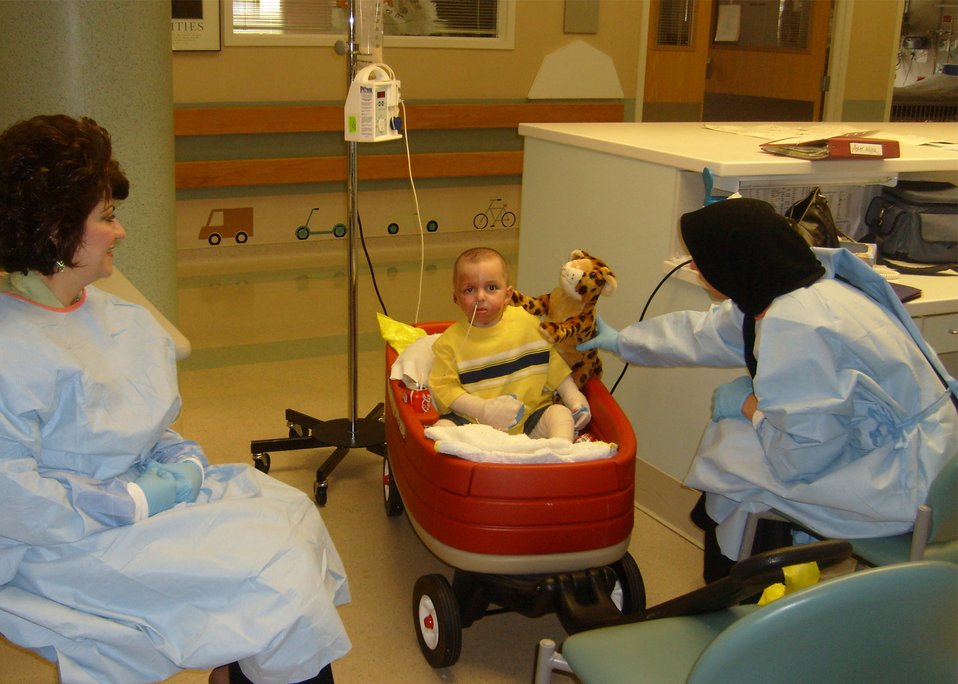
Young Iraqi burn victim progressing well

Al Amreeki receives a stuffed toy from his mother, Amil, April 10 at Shriners Hospital in Cincinnati. The 3-year-old left Balad Air Base, Iraq, with more than 45 percent of his body burned from a stove fire at his home and Airmen and medics have helped nurse him back to health.